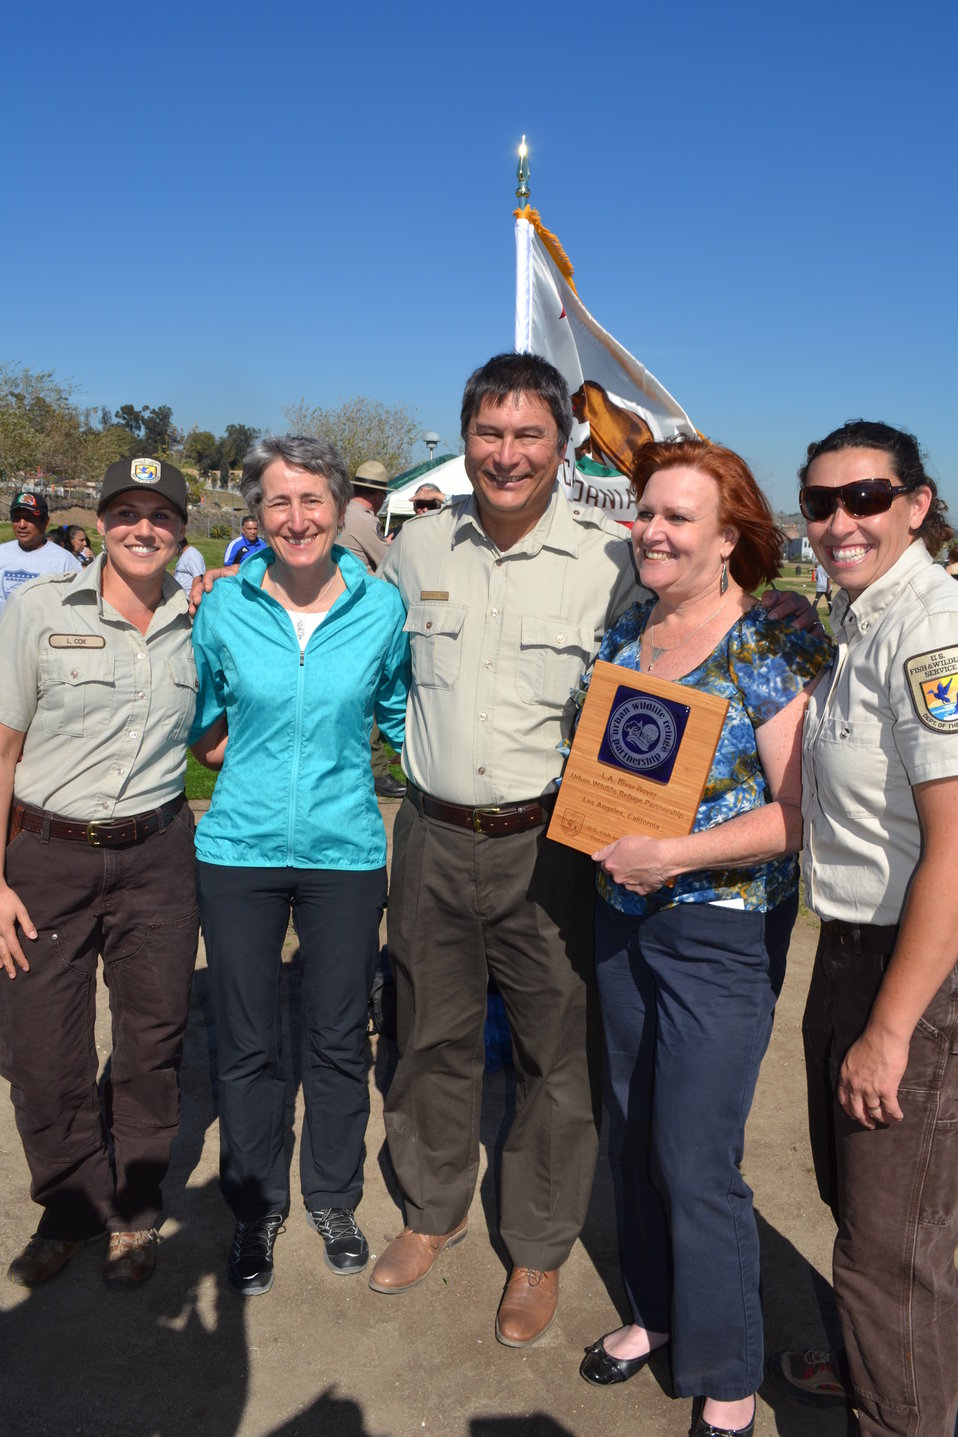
SOI Sally Jewell Visit to LA

From left: Public Information Specialist for the SDNWR Complex Lisa Cox, Secretary Sally Jewell, Project Leader for the SDNWR Complex Andy Yuen, Director of Education Programs for the Friends of the Los Angeles River Shelly Backlar, and Environmental Education Specialist for the SDNWR Complex Chantel Jimenez.
(Anne Dove, NPS for the USFWS)